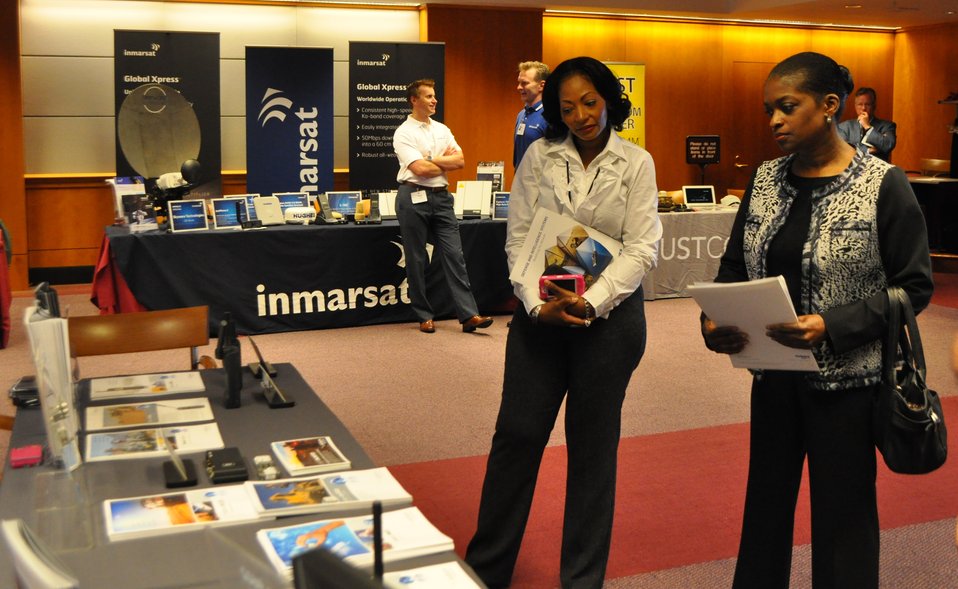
5.14.2014 Satellite Technology Demonstration

Commissioner Mignon Clyburn at the Satellite Technology Demonstration